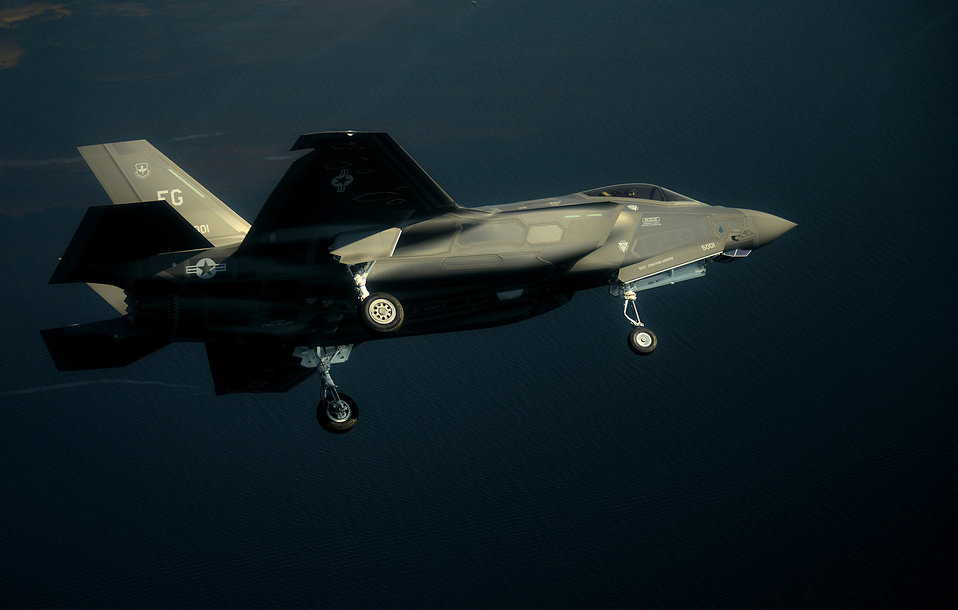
F-35 A reaches 500th sortie

An F-35A Lightning II joint strike fighter from the 33rd Fighter Wing at Eglin Air Force Base, Fla., flies over the Emerald Coast Sept. 19, 2012 preparing to land.